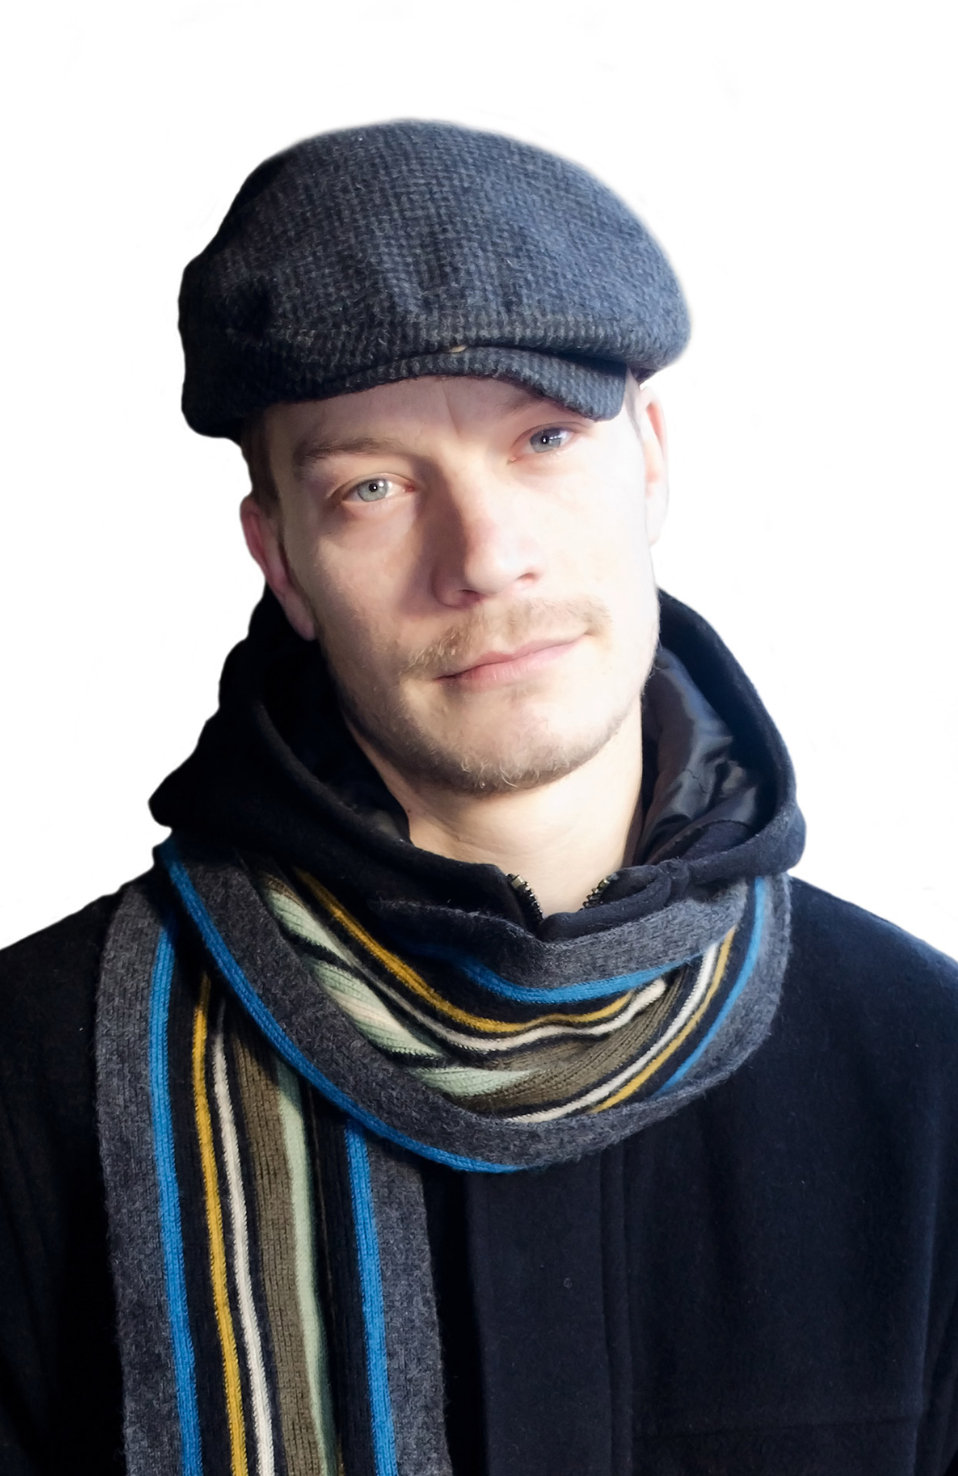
Winter fashion.